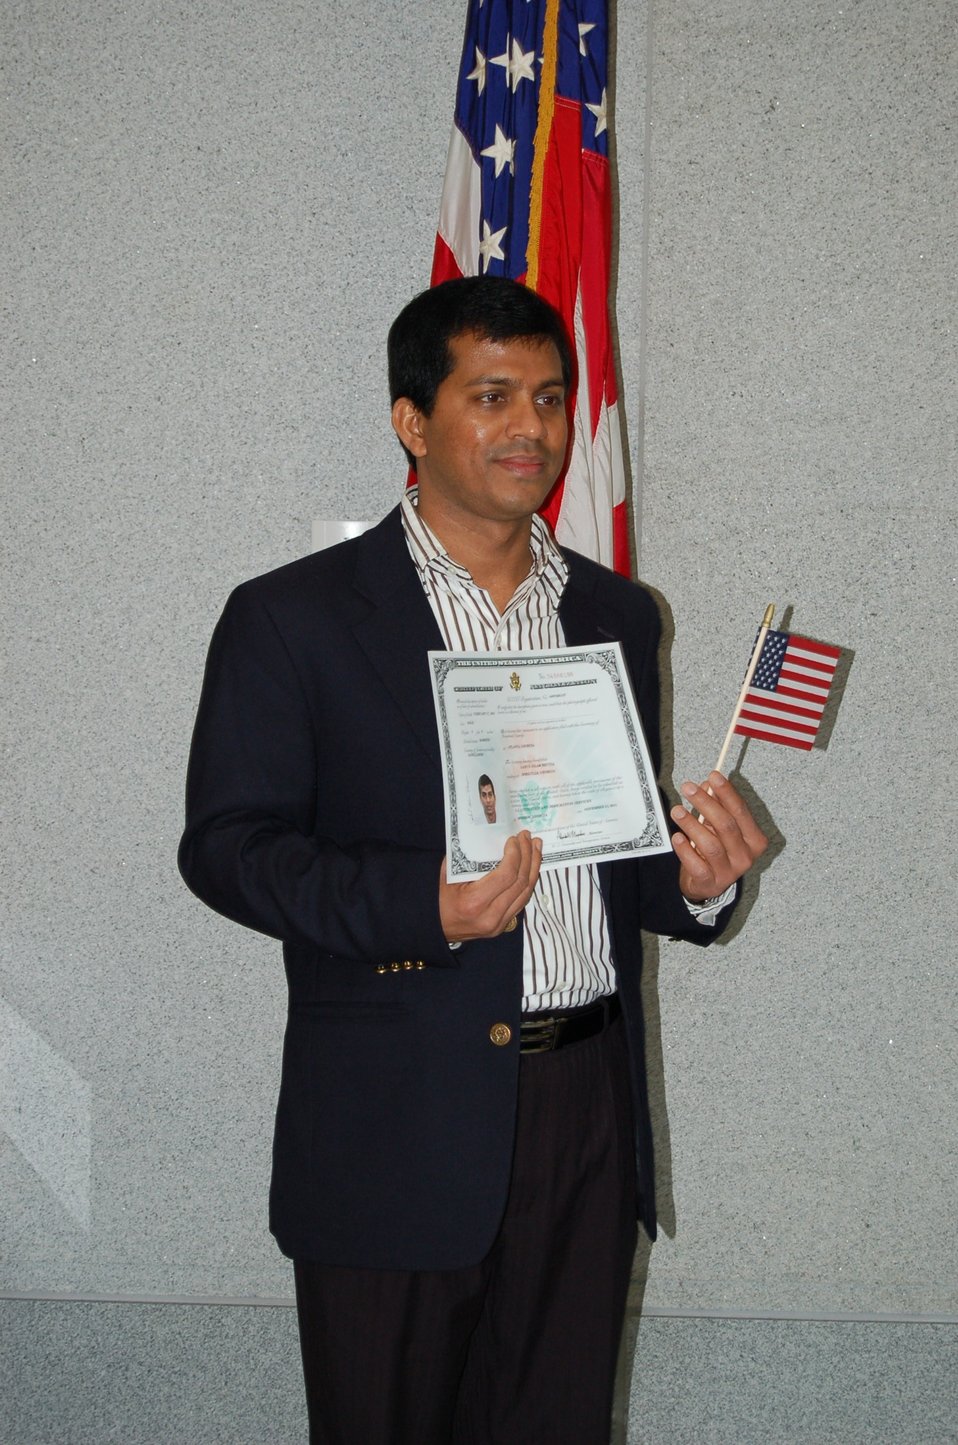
New Citizens